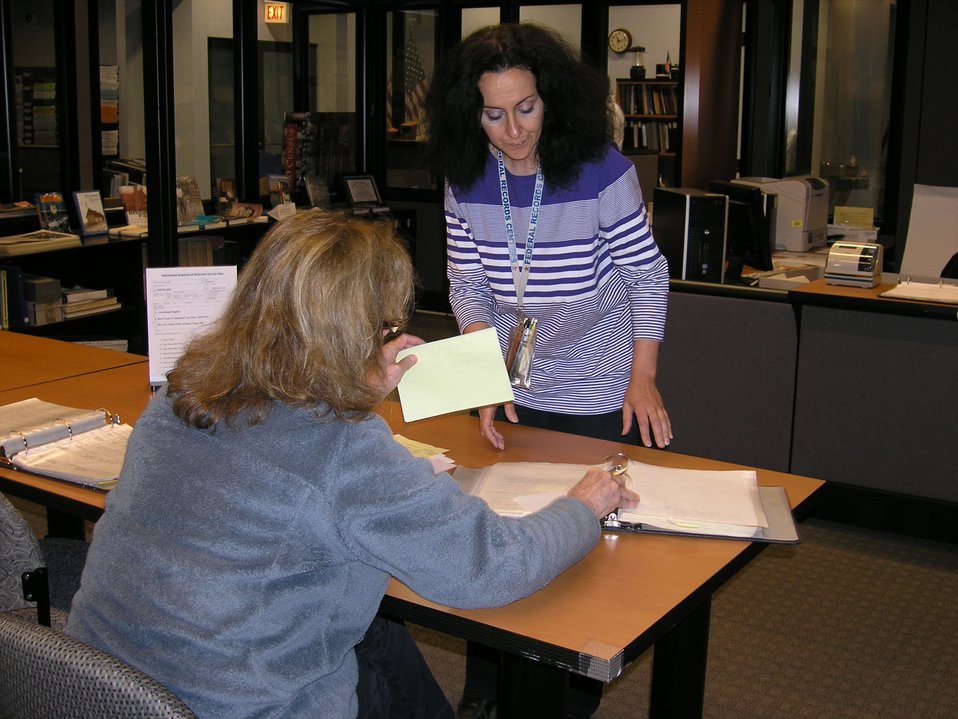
Katie Dishman, Archivist, assisting a researcher in the Archives Research Room; Location: National Archives at Chicago, Chicago, IL